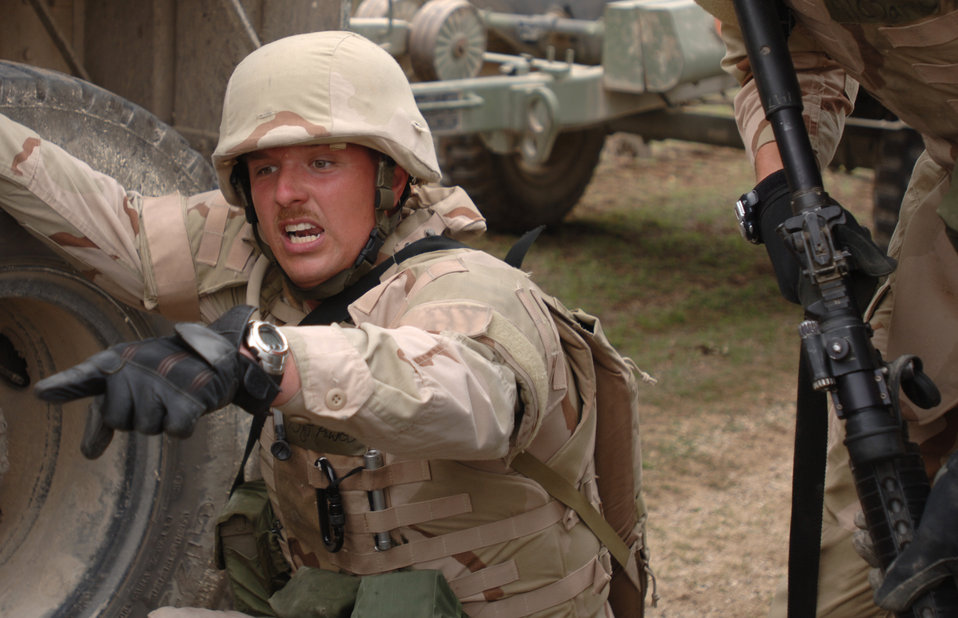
Convoy tactics

Tech. Sgt. Timothy Powers expedites the evacuation of a simulated convoy casualty during the Basic Combat Convoy Training course at Camp Bullis, Texas, Monday, April 3. 2006. The course is designed to keep Airmen battlefield focused and well-trained for convoy operations.